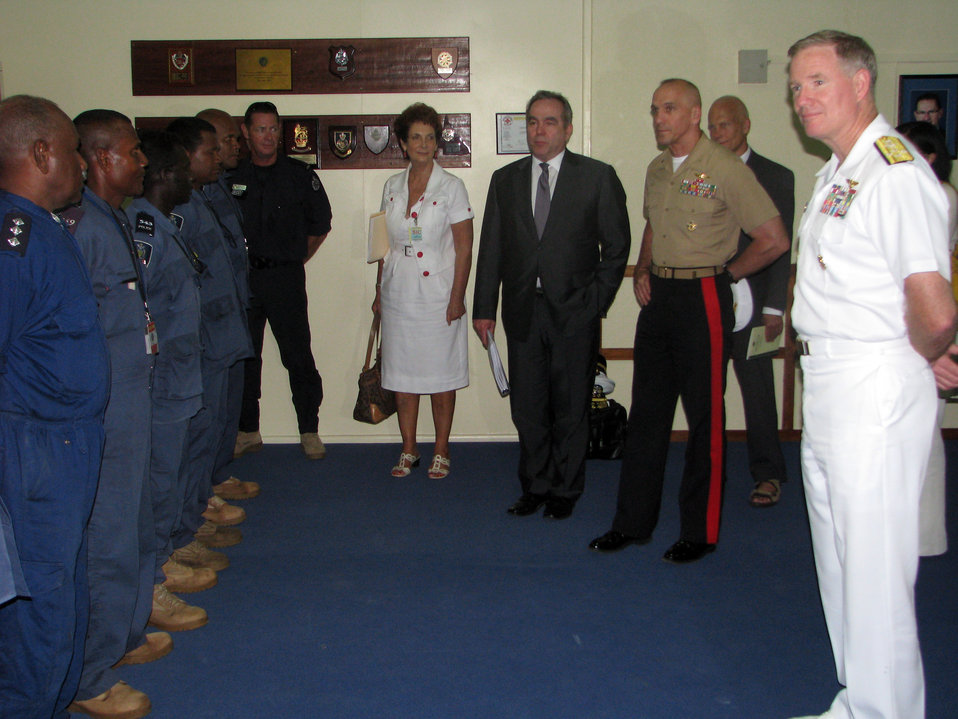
Assistant Secretary Campbell Addresses Solomon Islanders

Assistant Secretary of State for East Asian and Pacific Affairs Kurt Campbell, center, addresses Solomon Islanders assembled for training at the Regional Assistance mission to Solomon Islands (RAMSI) in Honiara, Solomon Islands, on June 29, 2011. Assistant Secretary Campbell met with RAMSI leadership during a visit to Solomon Islands. He is leading a U.S. delegation on a visit throughout the South Pacific to engage in discussions to enhance bilateral political, economic, and security relations in the region. The delegation includes Adm. Patrick Walsh, commander of U.S. Pacific Fleet, right; Office of the Secretary of Defense South/Southeast Asia Principal Director, Marine Corps Brig. Gen. Richard Simcock, right center; and U.S. Agency for International Development (USAID) Assistant Administrator Nisha Biswal, not pictured.